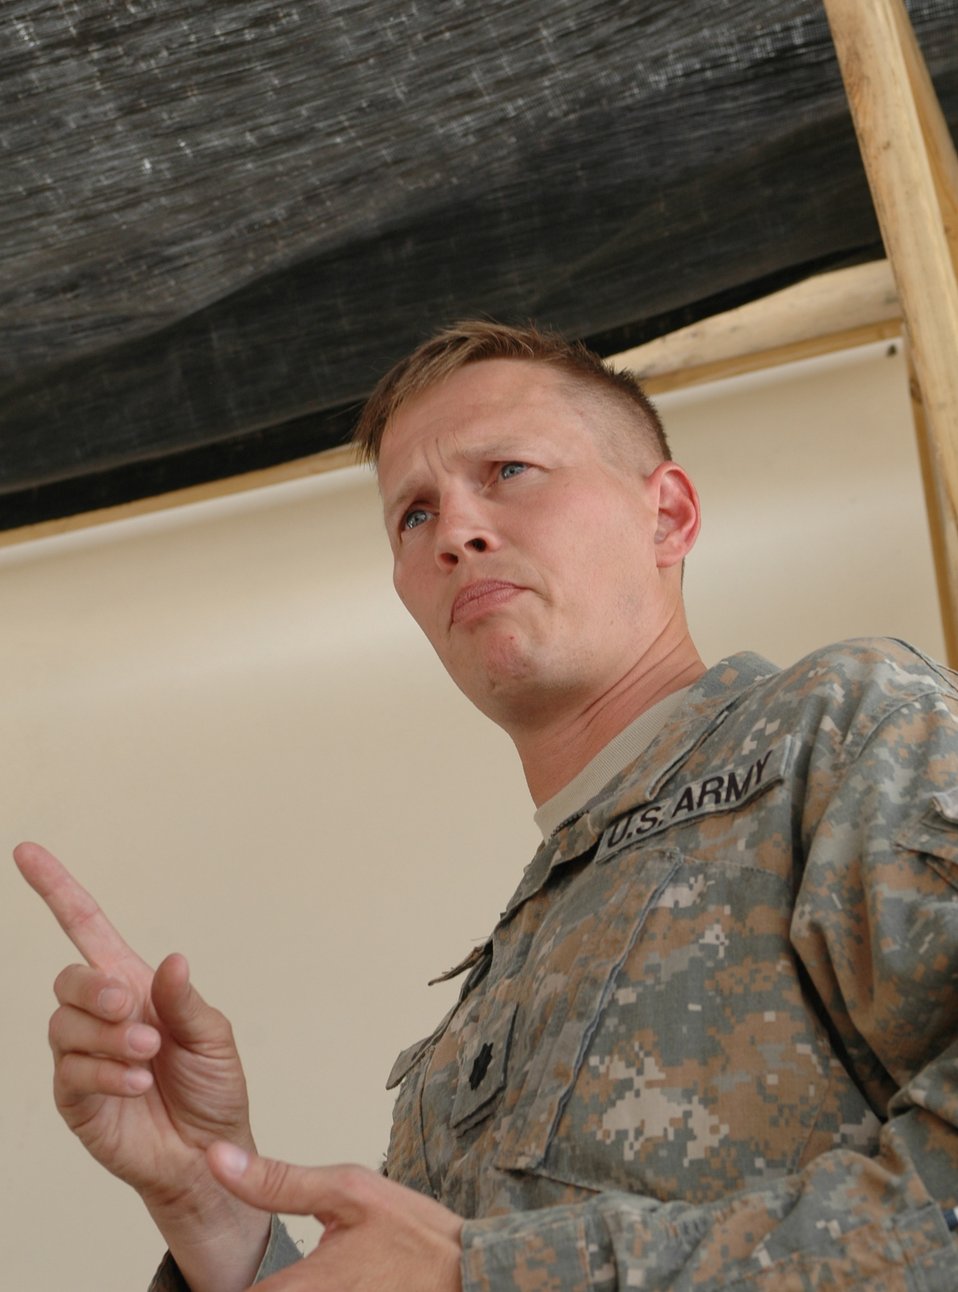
CODEL Berman